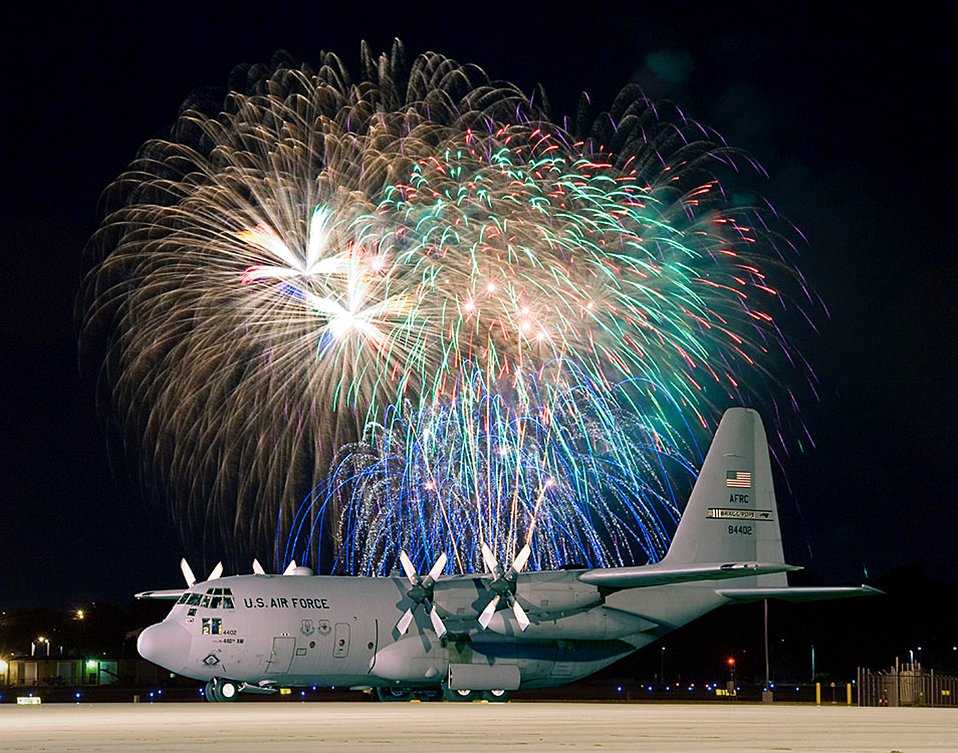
Celebrating the 4th

A C-130 Hercules from the Air Force Reserve Command's 440th Airlift Wing at General Mitchell Air Reserve Station, Wis., sits on the ramp during a 4th of July fireworks display taking place in a neighboring community.